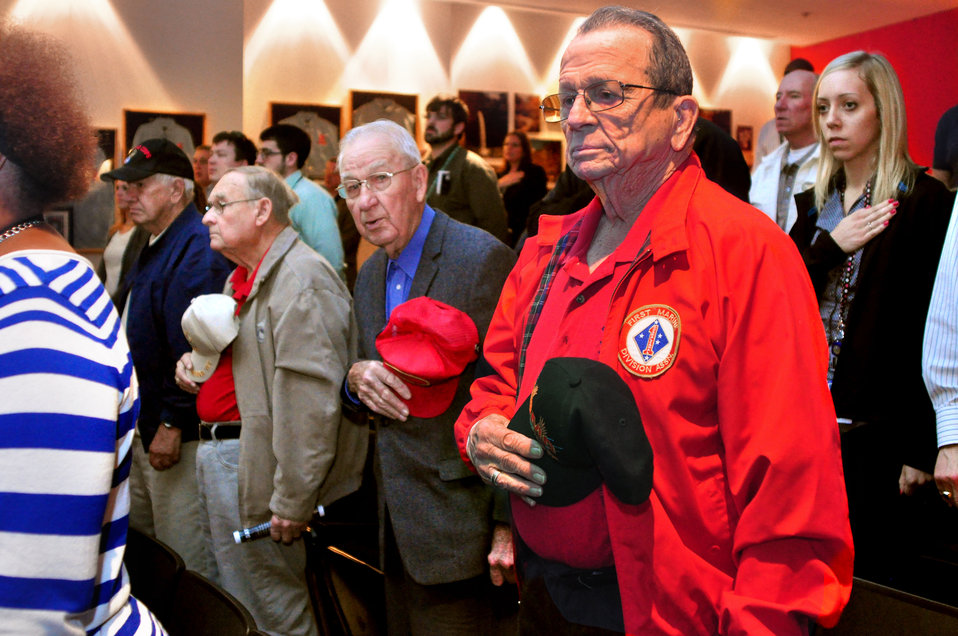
Veteran's Day Program DOE ORO Oak Ridge 2013

13-129c DOE photo Lynn Freeny 11-7-2013 Oak Ridge Tennessee